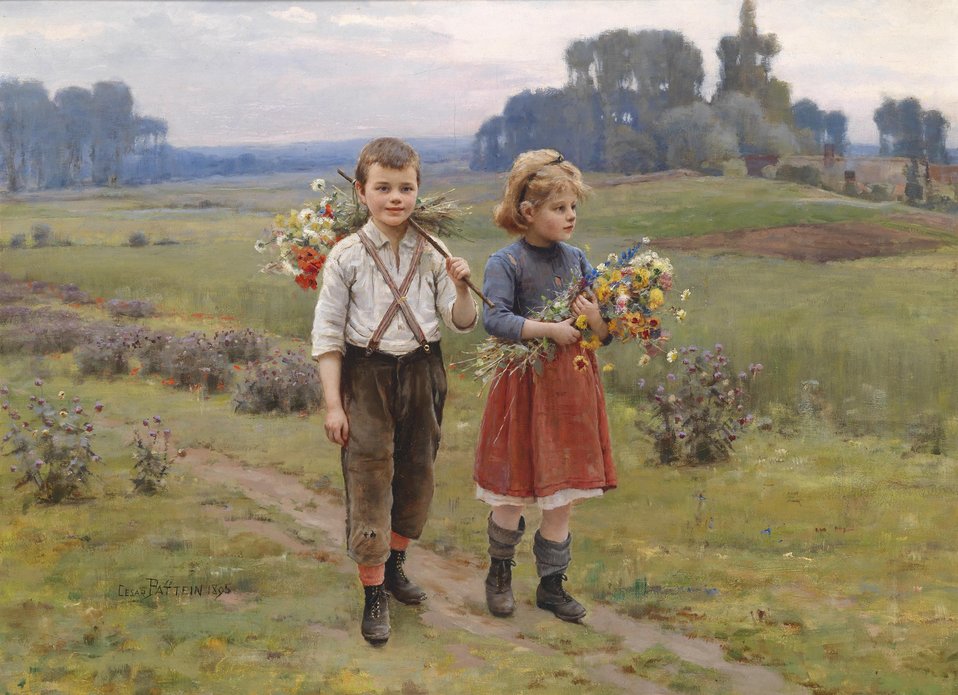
Kinder am Heimweg, signiert, datiert Cesar Pattein 1895, Öl auf Leinwand, 58 x 79 cm